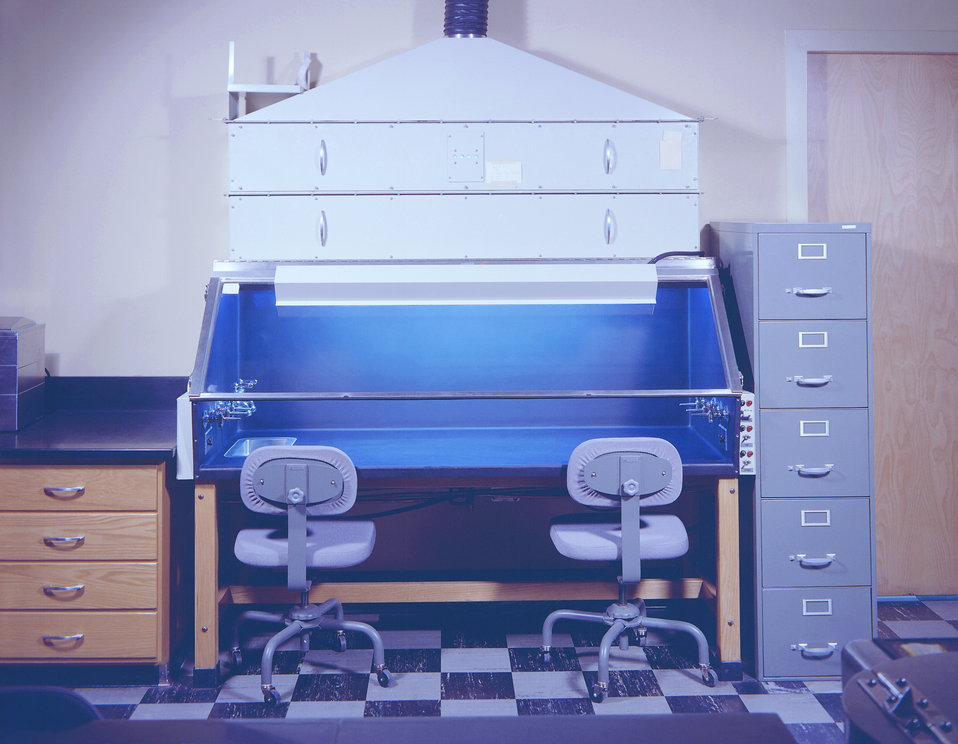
From 1963, this image depicted a biological safety cabinet, which appeared to be equipped with a ventilated hood, able to evacuate the hooded area air by drawing fresh air into the hood, thereby, keeping it out of the laboratory environment.